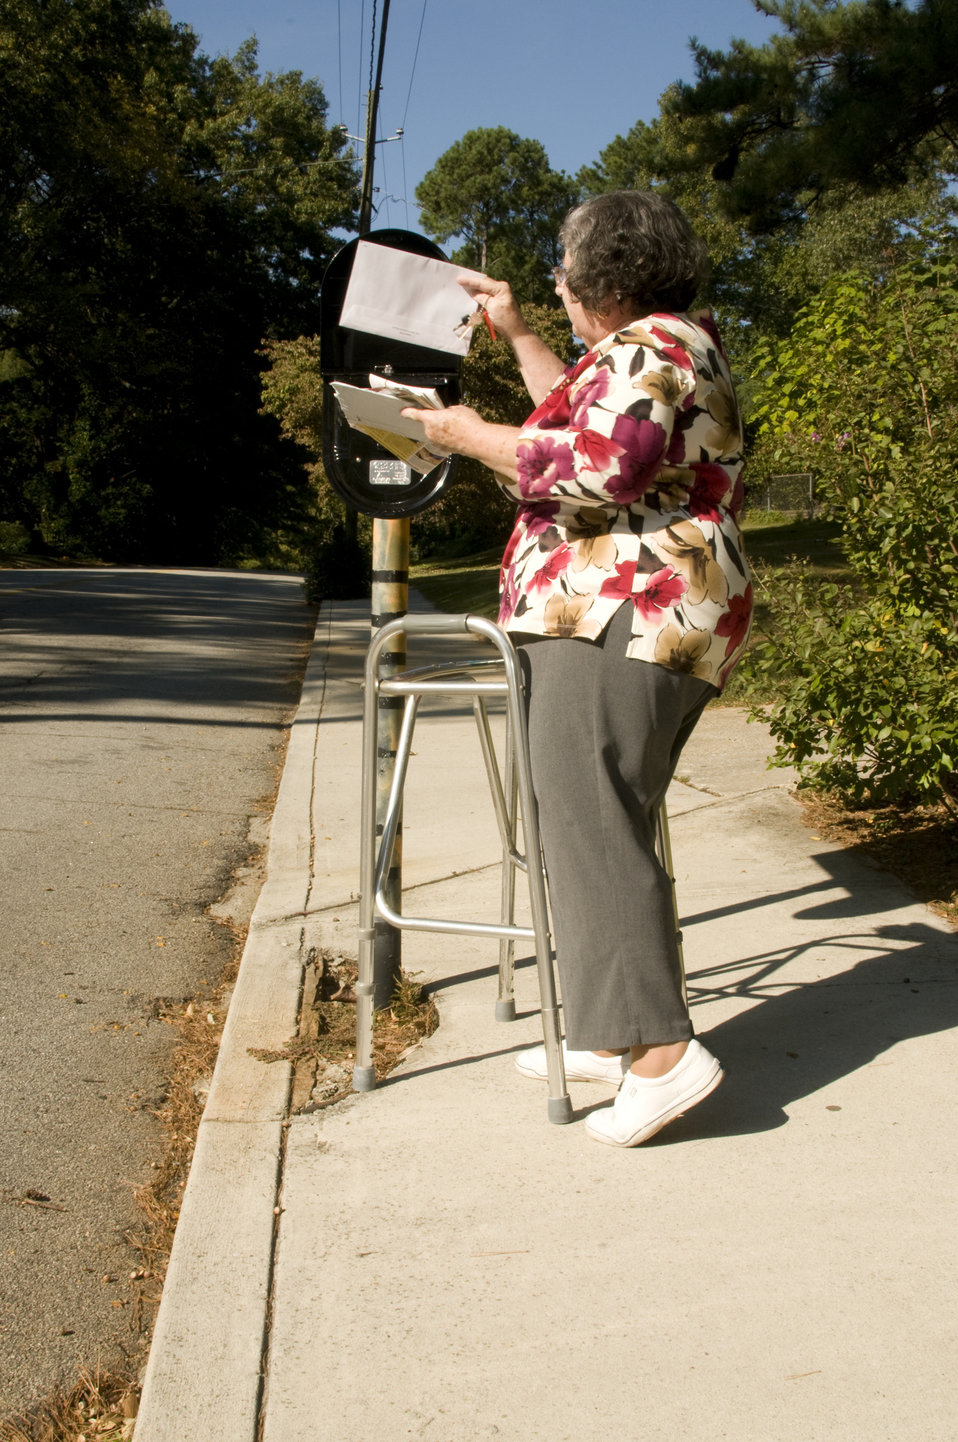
The woman pictured here is a rheumatoid arthritis patient, and is living with this disease, still doing her best to carry on with her day to day activities. With the help of her walker, she was shown retrieving her mail form a street-side mailbox.